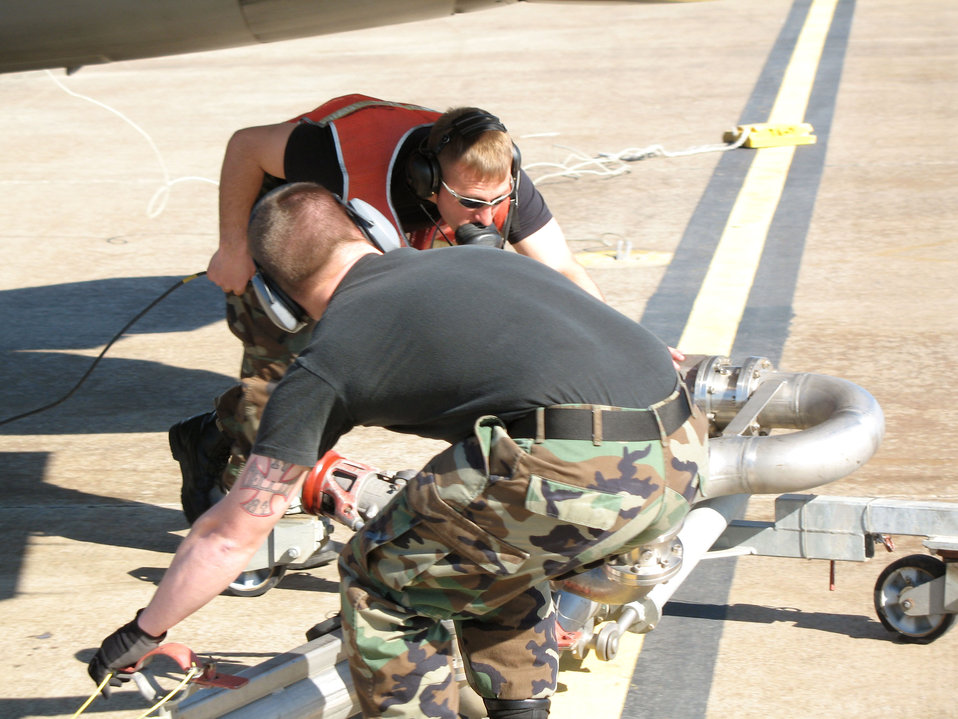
'Hot pitting' returns to Incirlik

Senior Airman Blake Mellom and Senior Airman Benjamin Polichnowski prepare to refuel an F-16 Fighting Falcon Jan. 22 at Incirlik Air Base, Turkey. Airman Mellom is assigned to the 52nd Logistics Readiness Squadron and Airman Polichnowski of the 52nd Aircraft Maintenance Squadron, both from Spangdalhem Air Base, Germany, in support of the 22nd Expeditionary Fighter Squadron.